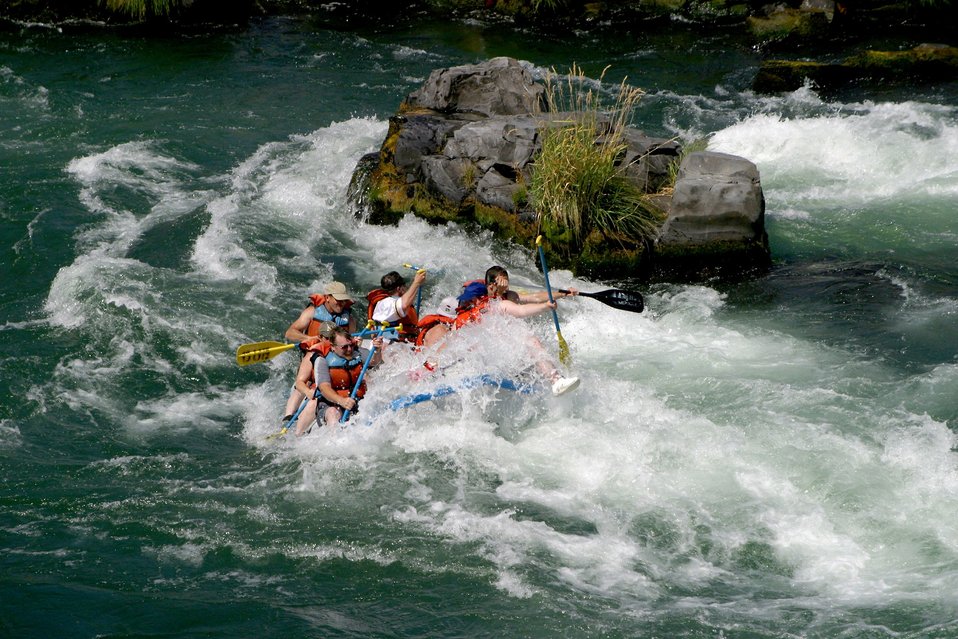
Wapinitia Rapids class III, has large roller coaster waves. 7/26/03 Pelton Dam 3600 cfs: Moody Rapids 4300 cfs.